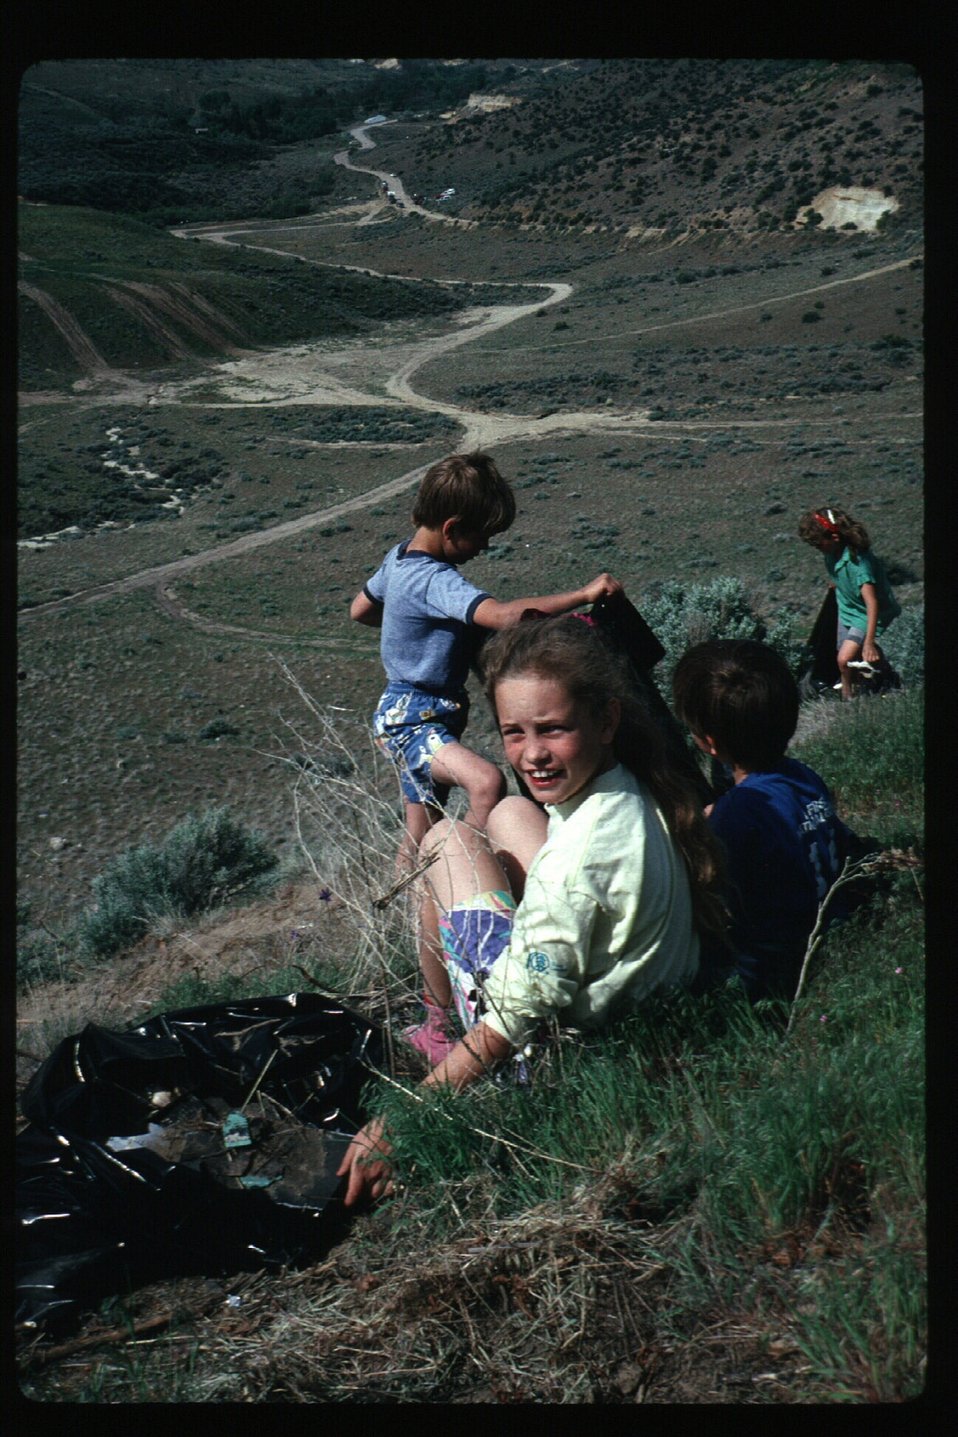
Rangeland Tending Boise Front Foothills Four Rivers Field Office LSRD Lower Snake River District